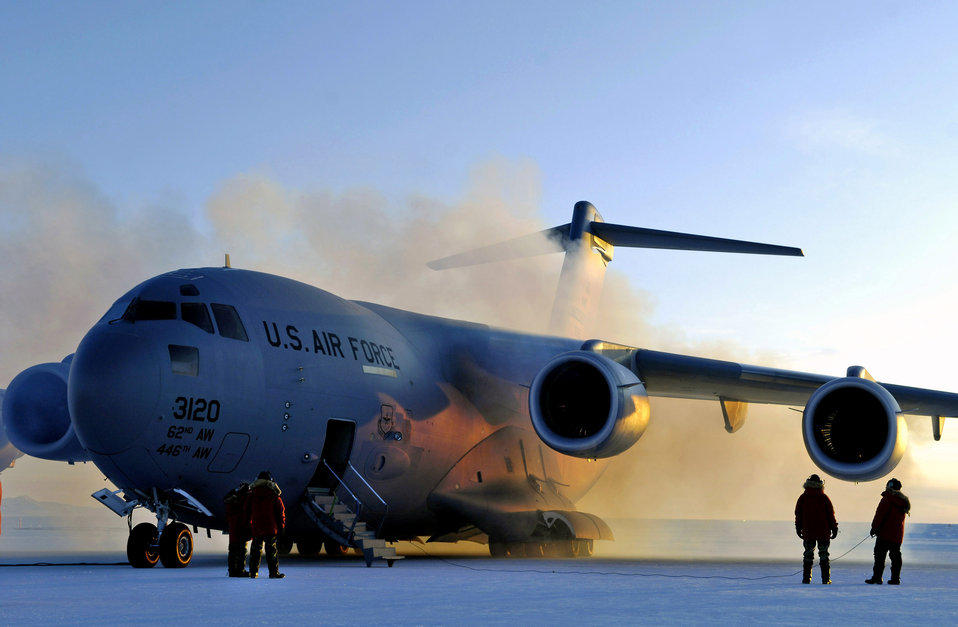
'Baby, it's cold outside'

Exhaust vapors form around a C-17 Globemaster III after engine start-up during an Operation Deep Freeze mission. The C-17 and 31 Airmen from McChord Air Force Base, Wash., conducted the annual winter fly-in augmentation of scientists, support staff, food and equipment for the U.S. Antarctic program at McMurdo Station, Antarctica.